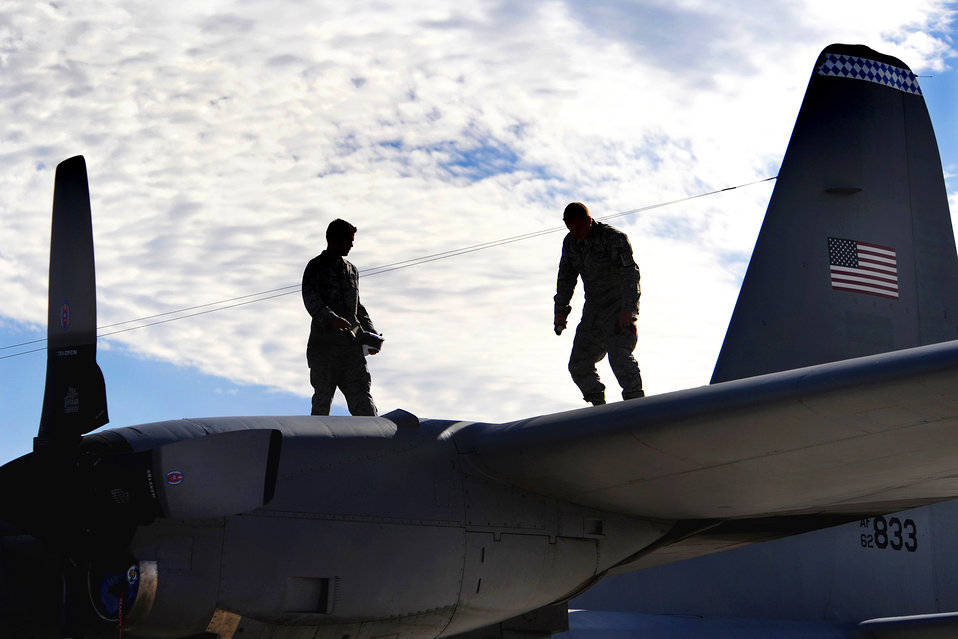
Wing-walking, circa 2009

Two C-130 Hercules crew chiefs conduct a post-flight inspection of their aircraft during a Mobility Air Forces Exercise Nov. 18, 2009, at Nellis Air Force Base, Nev. About 40 C-17 Globemaster IIIs and C-130 aircraft from Air Force bases around the world flew approximately 400 Soldiers from Fort Bragg, N.C., during the airdrop portion of the exercise.